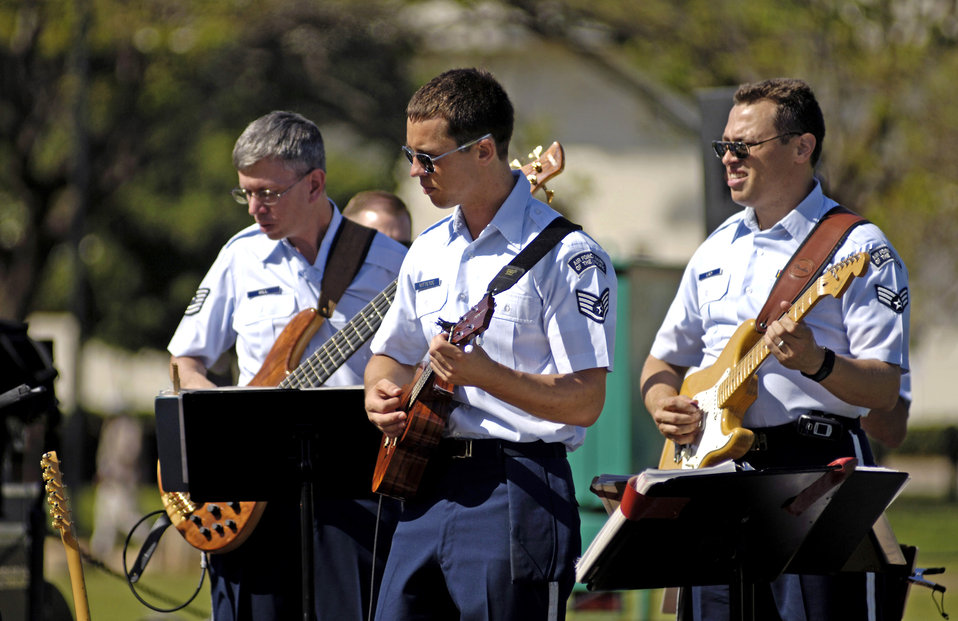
Twilight Tattoo

(From left) Tech. Sgt. Darrell Hankins, Staff Sgt. John Kukan and Senior Airman Greg Lacy perform during the 10th Annual Twilight Tattoo at Fort DeRussy, Hawaii, on Saturday, May 13, 2006. The event features bands from all the services. The Airmen are with the Air Force Band of the Pacific.